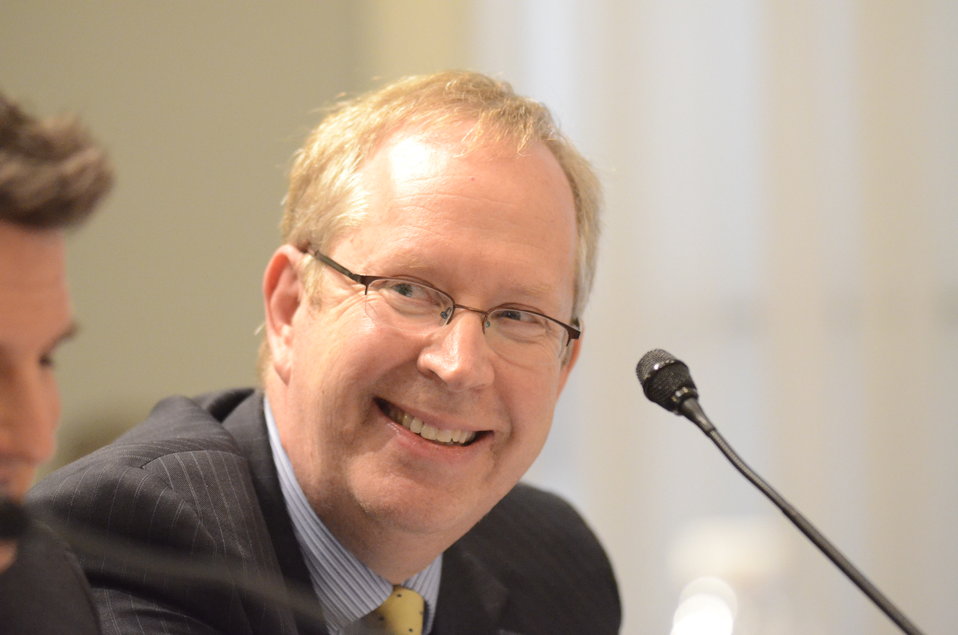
Dinsmore & Shohl LLP partner Mr. Reed D. Rubinstein testifies on Retailers & Entertainers Lacey Implementation & Enforcement Fairness Act & Freedom from Over-Criminalization & Unjust Seizures Act at the Longworth House Office Building in Washington, D.C. on Tuesday, May 8, 2012.